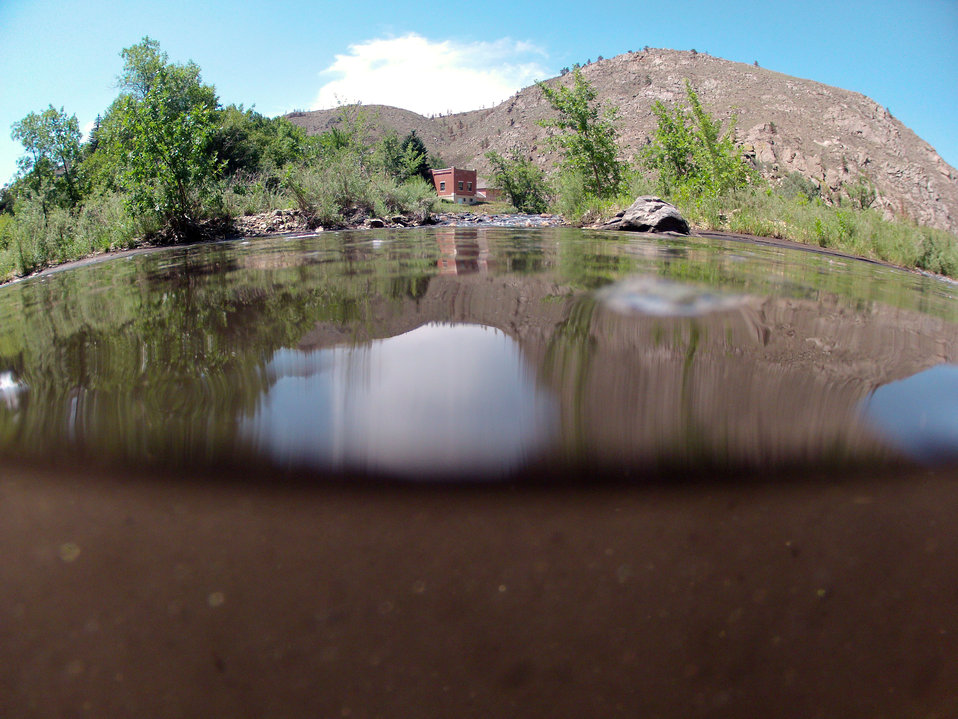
Underwater view of what would normally be clear mountain waters at a confluence of two tributaries, the Cache la Poudre and the North Fork of the Cache la Poudre, near Seaman Reservoir, 60 miles north of Denver, Colorado on Friday, July 20, 2012. Because of the Hewlett Gulch Fire (May 14, 2012), in the Poudre Canyon area clear water has been transformed to nearly black water, heavily laden with ash, silt, and burnt debris washed down mountainsides by thunderstorms. At its peak more than 400 firefighters were battling fires pushed by 50 mph winds. When the last embers were cooled, more than 12-square miles lay blacked at a cost of approximately 3.2 million dollars. The aerial distribution of straw has successfully kept nearby Seaman Reservoir clean for the drinking water of the City of Greeley. Forest Service lands receive straw, while private and other lands receive a seed mix and straw to promote ground cover plant growth on ash-covered lands. In total, 1,800 tons of straw will be applied during the 14-day operation. One quarter of the cost was paid by the City of Greeley and the U.S. Department of Agriculture funded the remainder.